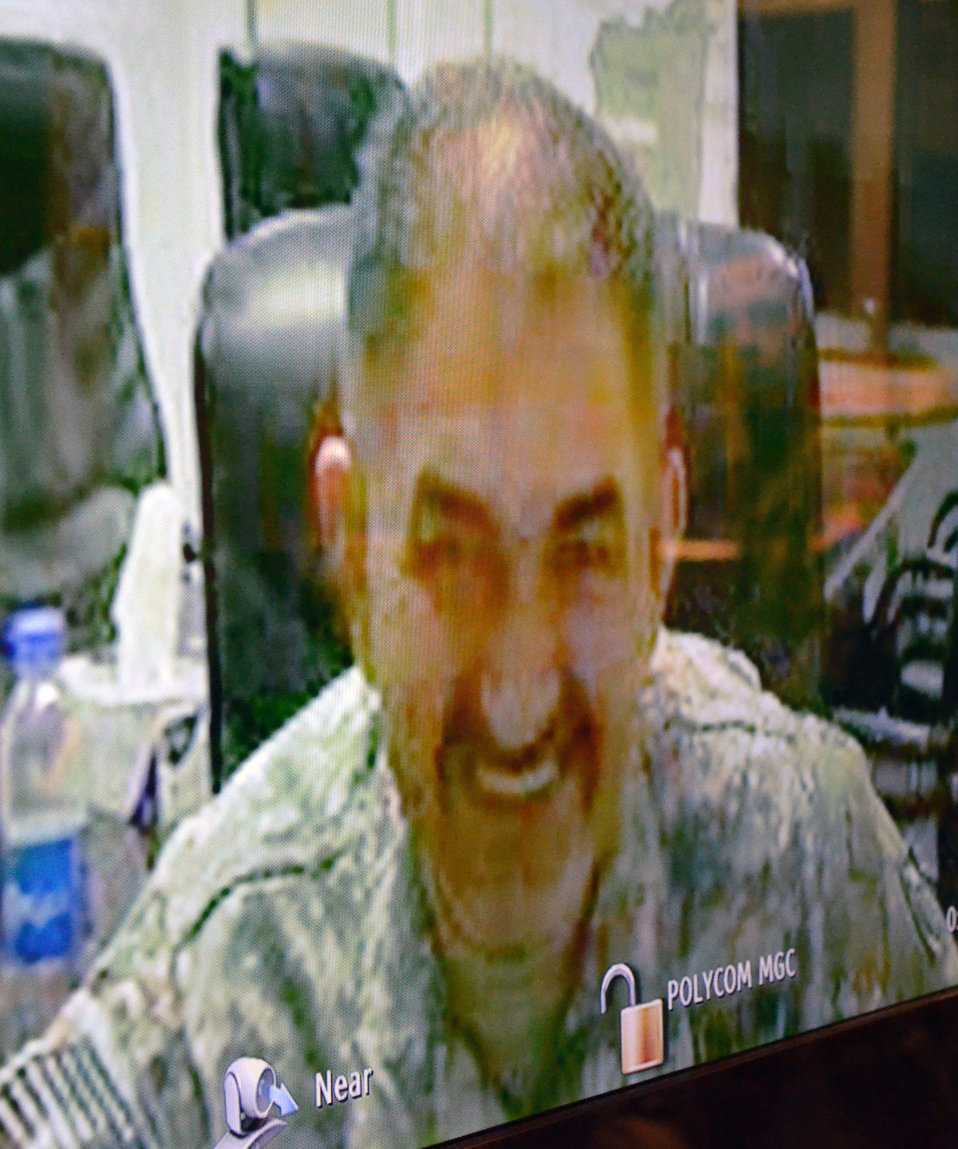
Holiday wishes from dad in Afghanistan

Mehdi Mizani, an employee of the U.S. Army Corps of Engineers Sacramento District, shares holiday wishes with his Northern California family and co-workers via live video conference from his current assignment location in Afghanistan Dec. 20, 2012. By the time he returns, Mizani will have helped direct Corps construction programs for two full years in Afghanistan. The video linkup was sponsored by the Sacramento District’s family support network.